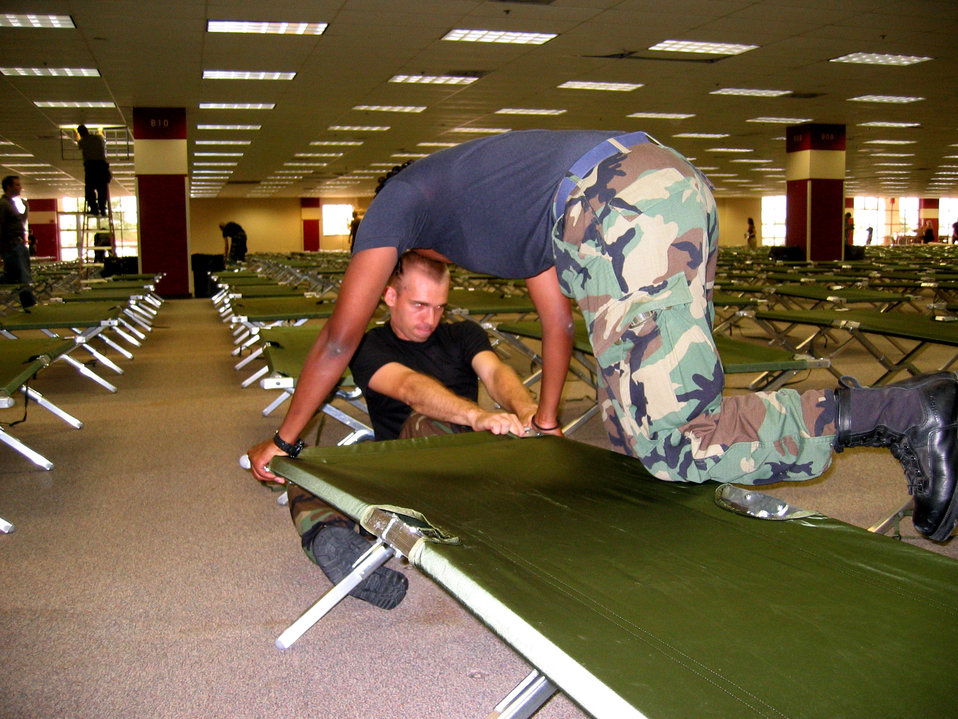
Lackland Airmen turn office areas into living spaces

SAN ANTONIO -- Airman Yohanna Tucker helps Airman 1st Class Daniel Morton put one of about 2,500 cots together at a center to house people displaced by Hurricane Katrina. In all, 200 Airmen from nearby Lackland Air Force Base helped tear down modular office furniture in a 350,000 square foot building and set up the cots. Airman Tucker is assigned to the 331st Training Squadron, and Airman Morton is assigned to the 323rd TRS.